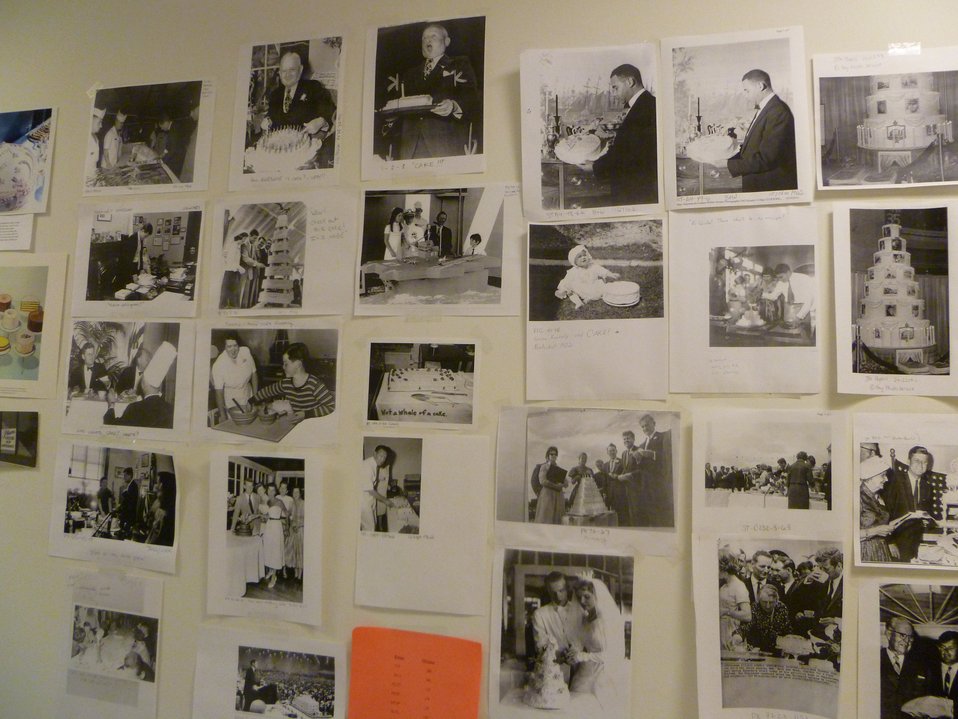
The Cake Wall at the John F. Kennedy Library, where our audiovisual archivists display our many photographs of Kennedys (and others) with cake!; Location: John F. Kennedy Presidential Library, Boston, MA